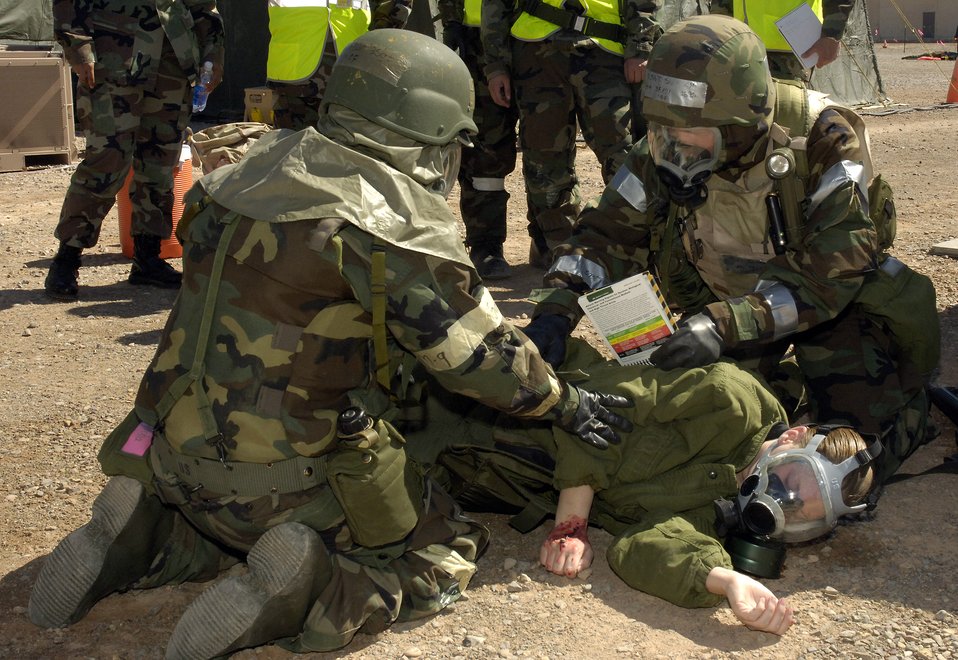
Airmen complete realistic deployment exercise

Airmen perform self aid and buddy care in full mission oriented protective posture gear after a simulated chemical attack as part of a deployment exercise at Holloman Air Force Base, N.M., May 7.